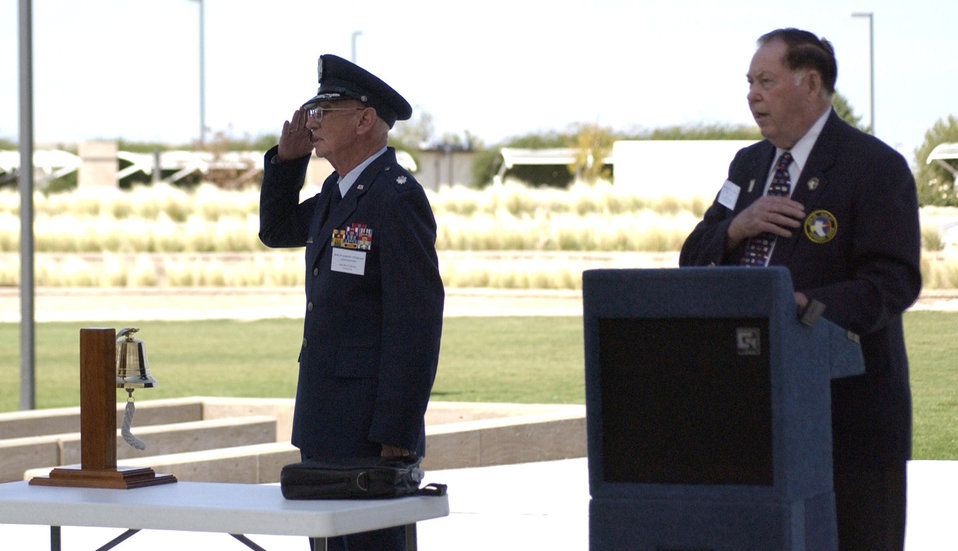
Seeds of 56-year marriage planted during Berlin Airlift

Retired Lt. Col. James Spatafora and Earl Moore, the president of the Berlin Airlift Veterans Association, recite the pledge of allegiance during the Berlin Airlift plaque dedication at Veterans Memorial Park in Albuquerque, N.M., Oct. 4. There were more than 150 attendees at the dedication.